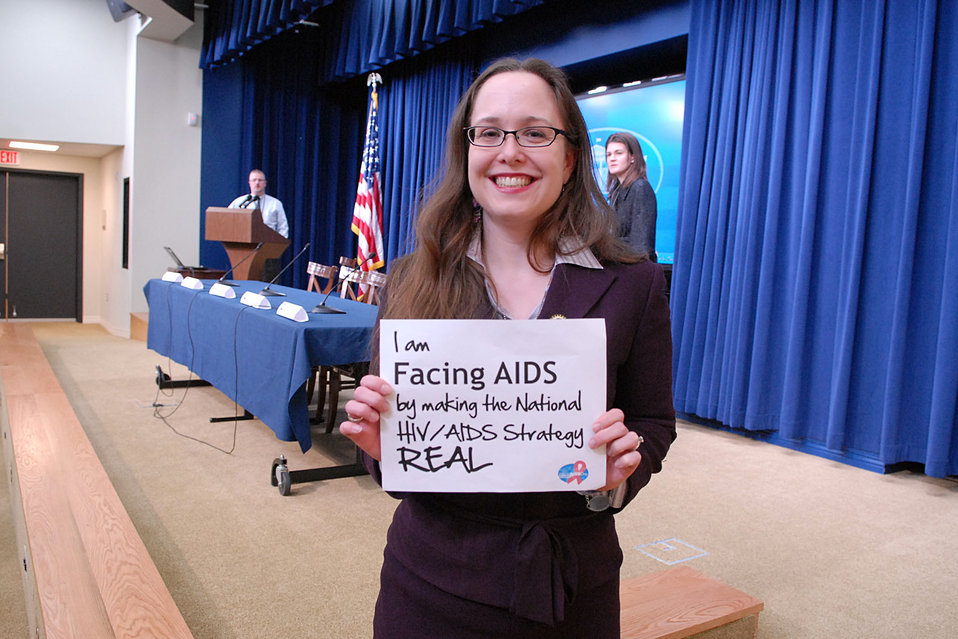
I am Facing AIDS by making the National HIV/AIDS Strategy REAL